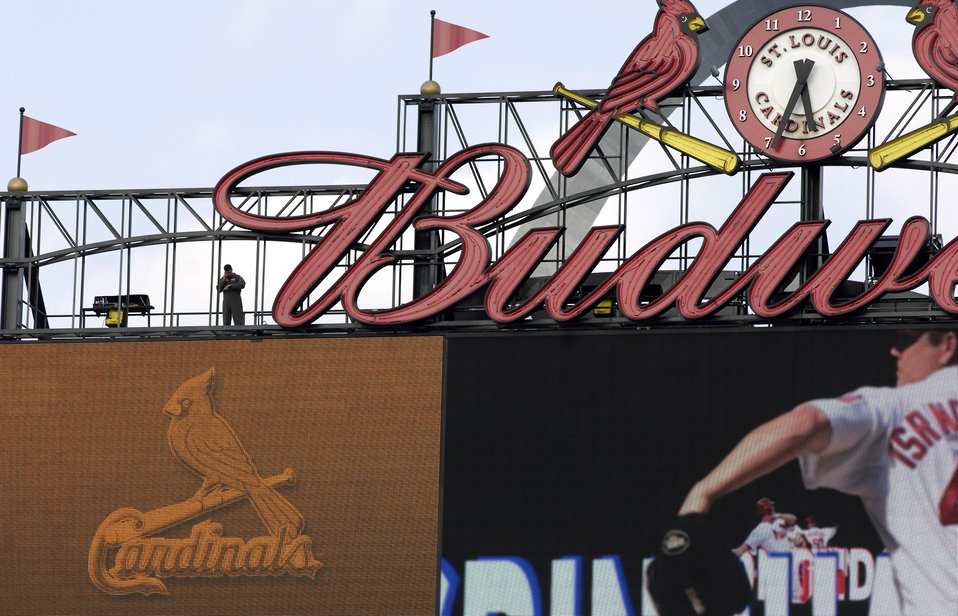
Air Force week in St. Louis

High atop the St Louis Cardinals scoreboard, Capt. Dan Simpson calls in a C-17 Globemaster III as the National Anthem comes to an end before a Cardinals-Giants baseball game July 7. The flyover was part of Air Force Week St. Louis.